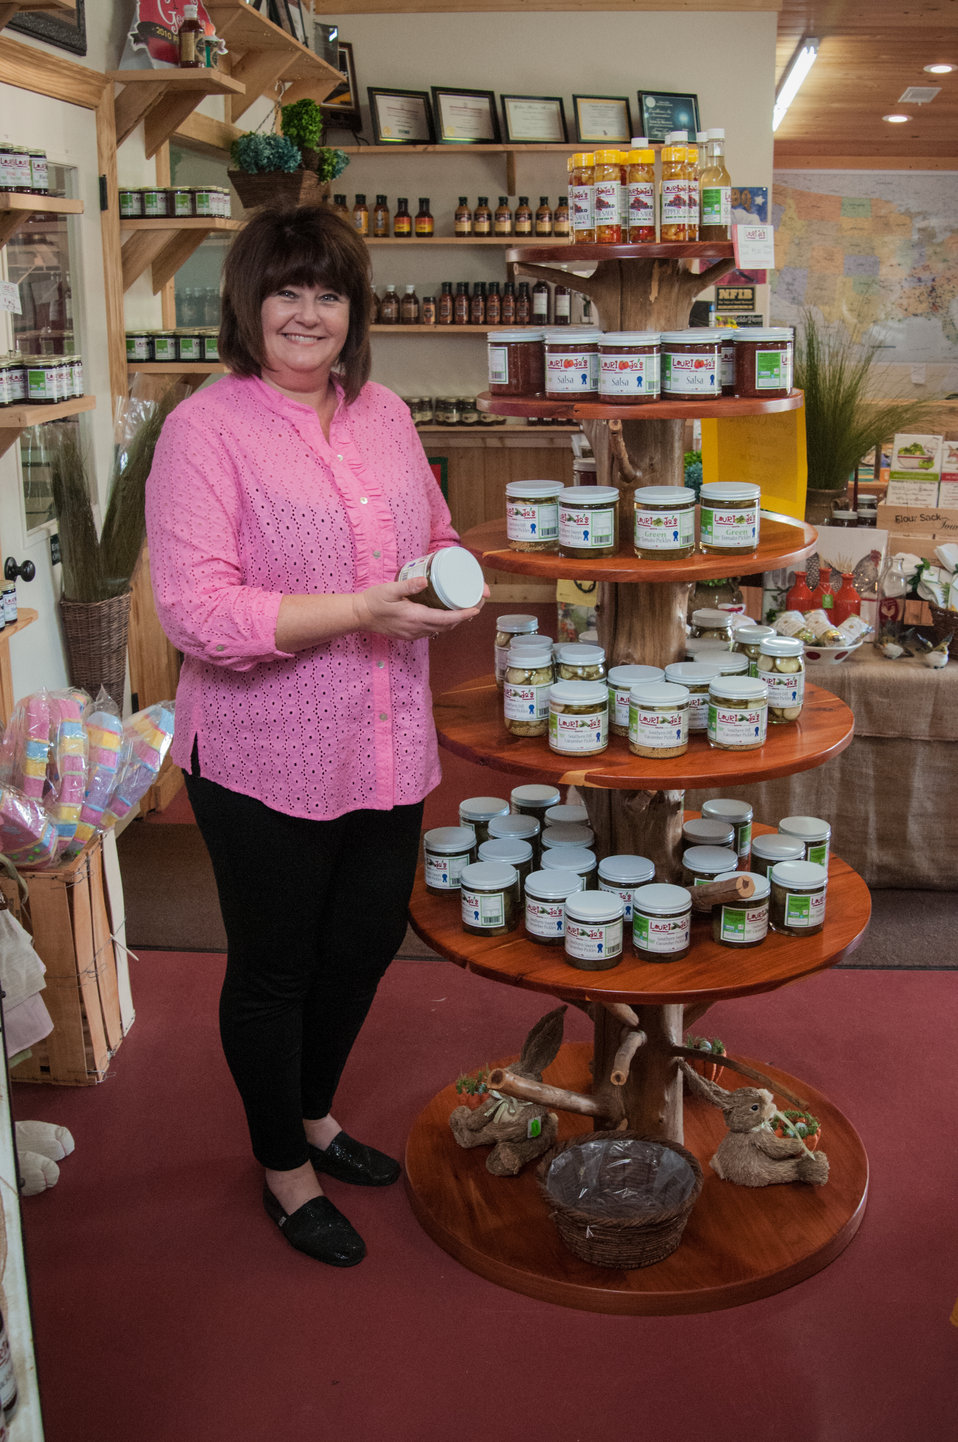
Laurie Jo’s Southern Style Canning business owner Laurie Jo Bennett shows off some of her new canned produce in the store in Norman Park, Colquitt County, GA on Mar. 7, 213. Bennett secured a U.S. Department of Agriculture (USDA) Rural Development (RD) Rural Business Enterprise Grant (RBEG) to help market her business Laurie Jo’s Southern Style Canning in Norman Park, Colquitt County, GA. Consumers may now purchase Lauri Jo’s Southern Style Canning Line in Whole Foods, Earth Fare and Kroger stores across 20 states. The grant from USDA has enable Lauri Jo to employ 26 people. The USDA Strike Force Initiative has designated Colquitt County, GA as a Strike Force county selected to receive assistance to relieve persistent poverty in historically high-poverty counties.